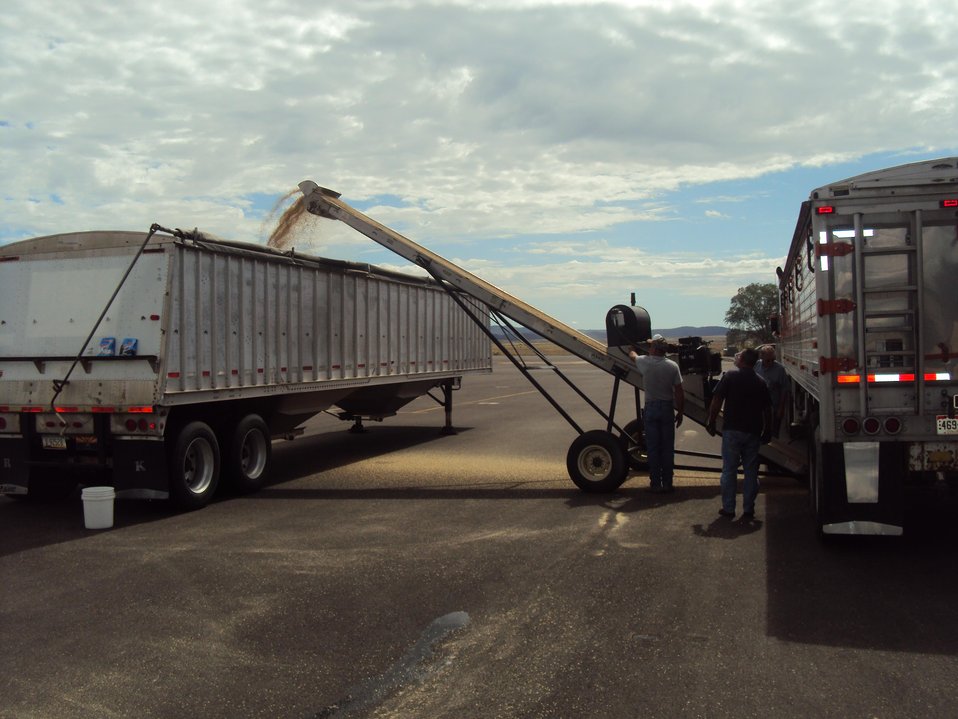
Seed for Air Tractors used for aerial seeding of severe burned areas of the Silver Fire is loaded into storage containers. The Silver Post Fire response has the Burned Area Emergency Response (BAER) team beginning operations to seed acres of high burn severity and to mulch additional acres. Seeding reduces effects to downstream life, property, and infrastructure by reducing erosion and runoff. Areas of high burn severity are to be seeded with a quick germinating, non-persistent annual cereal barley that would provide rapid ground cover. A small percentage of native perennial species would also be included to give the burned area a jump start in natural recovery, and provide for long-term ground cover. Mulch is the most effective treatment for controlling erosion and runoff, as it provides immediate ground cover. Mulch also assists in stabilizing soil in and around these areas. Aircraft for seeding operations will be based at the Gila National Forest Air Tanker Base.